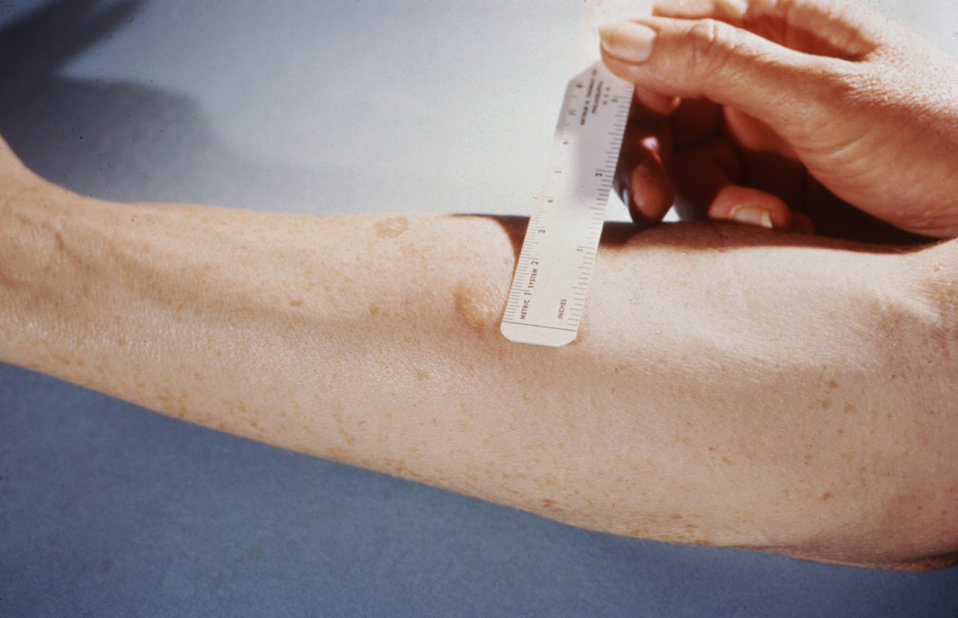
This patient presented with a positive reaction to the 48-hour Mantoux test.